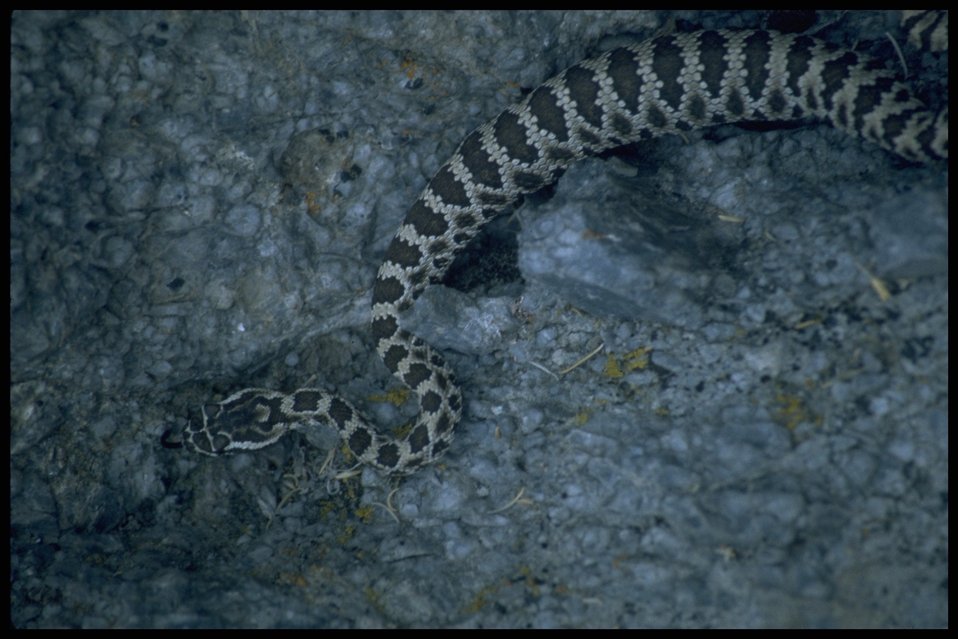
Rattle Snake, Lakeview District.